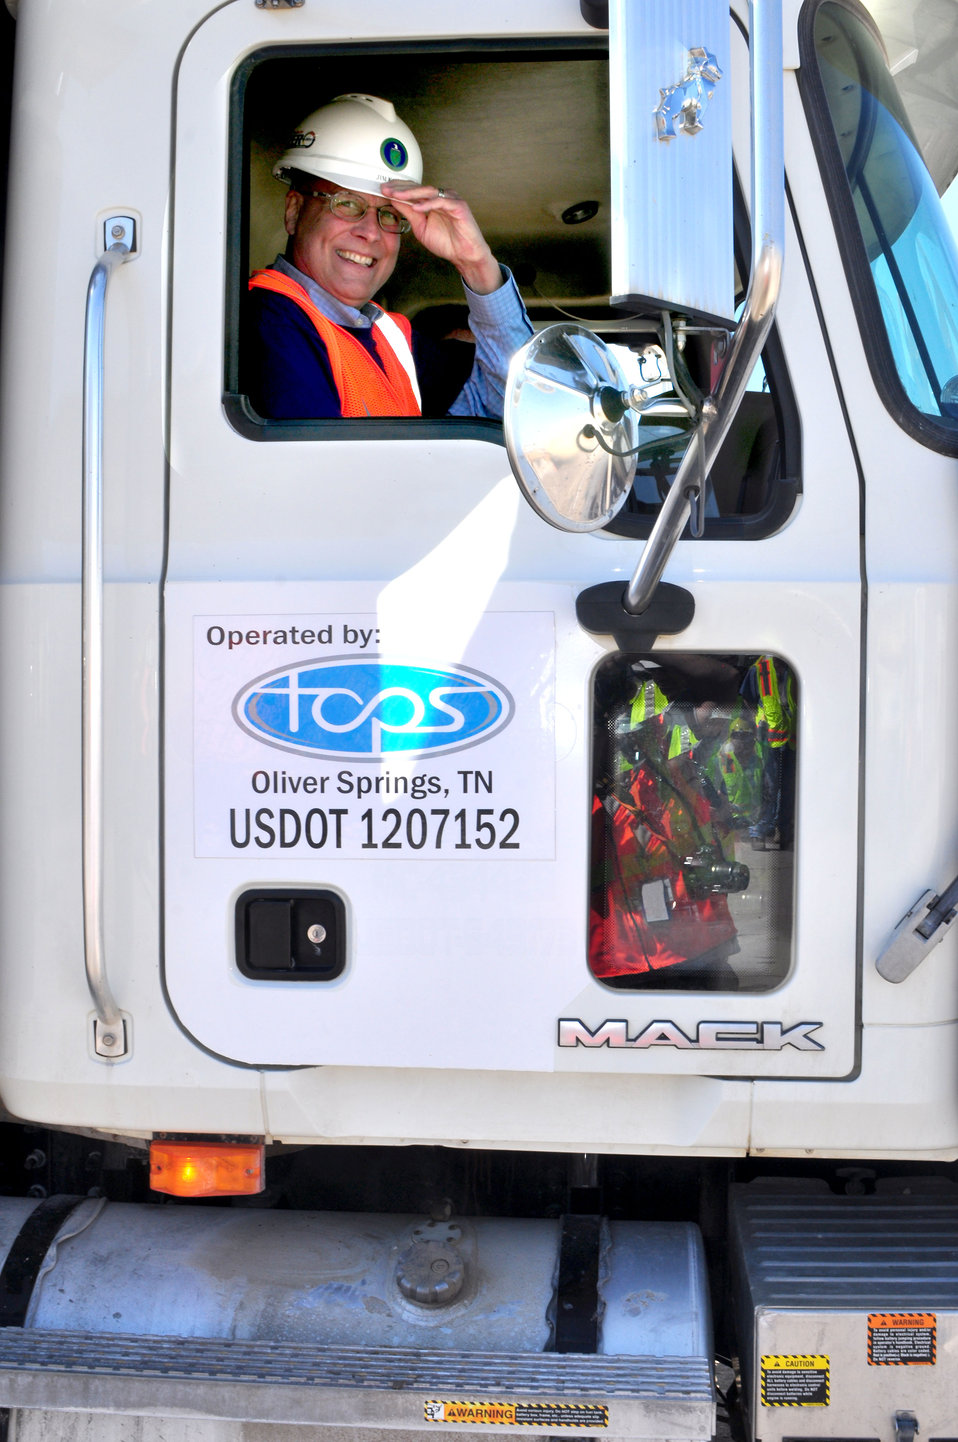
K-25 Demolition Last Load Jim Kopotic Oak Ridge 2014

14-032 DOE Photo by Lynn Freeny 3-11-214 Oak Ridge Tennessee